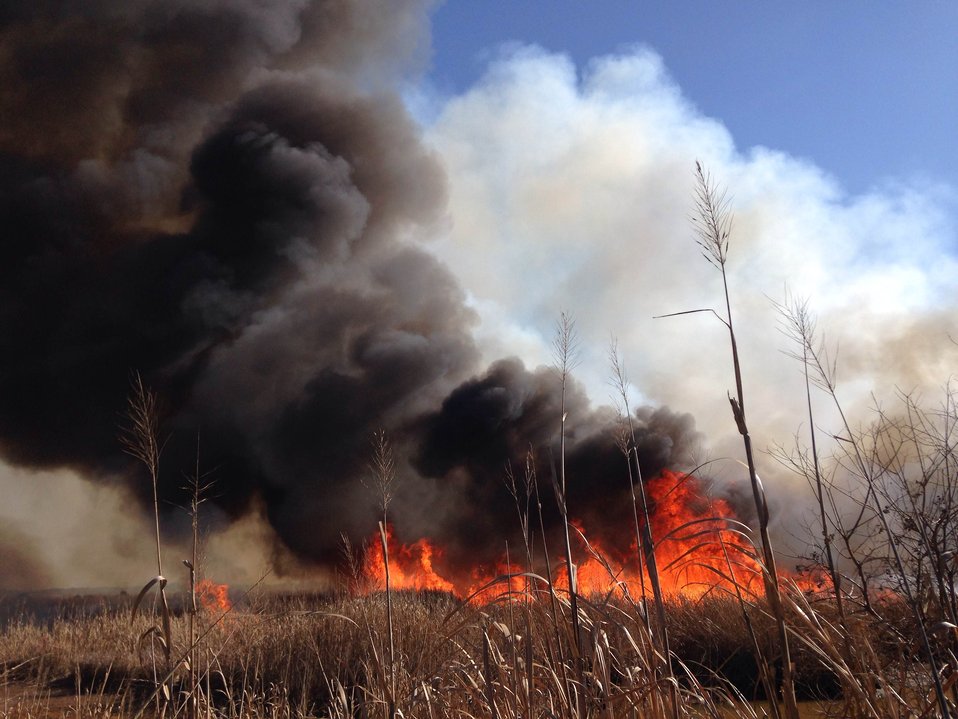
Ace Basin RX 012214

Fire behavior during a prescribed fire at ACE Basin NWR in South Carolina.